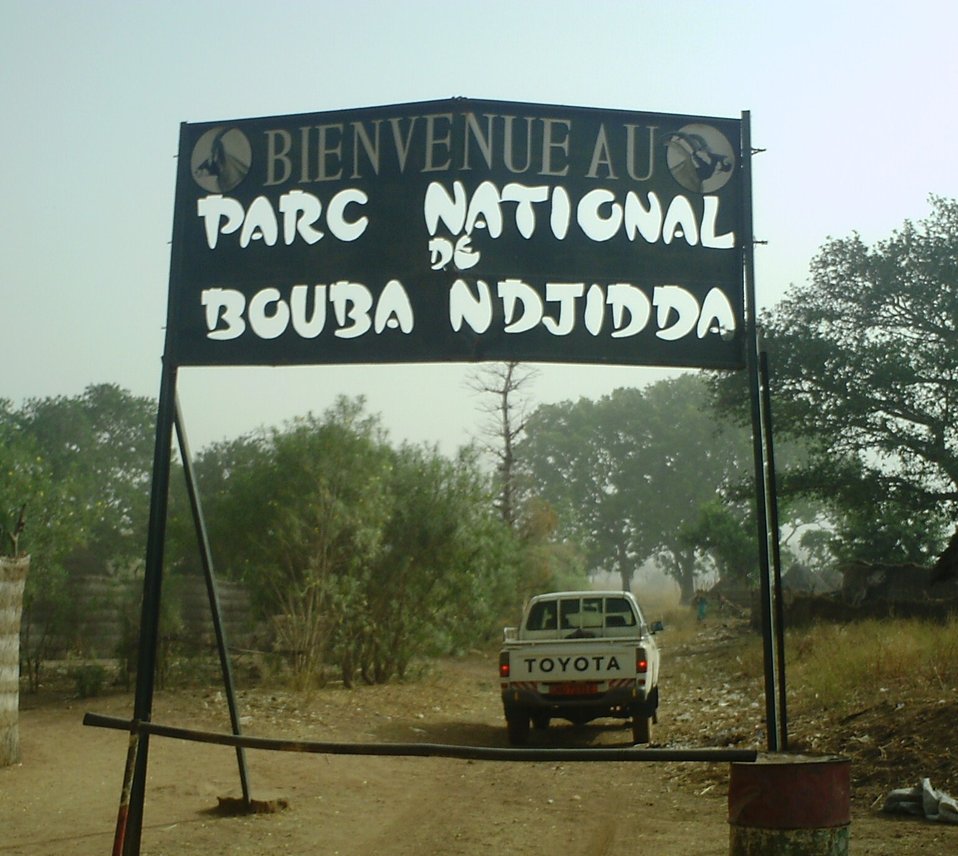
Bouba Njida

Bouba Ndjida National Park in Cameroon, location of elephant slaughter.